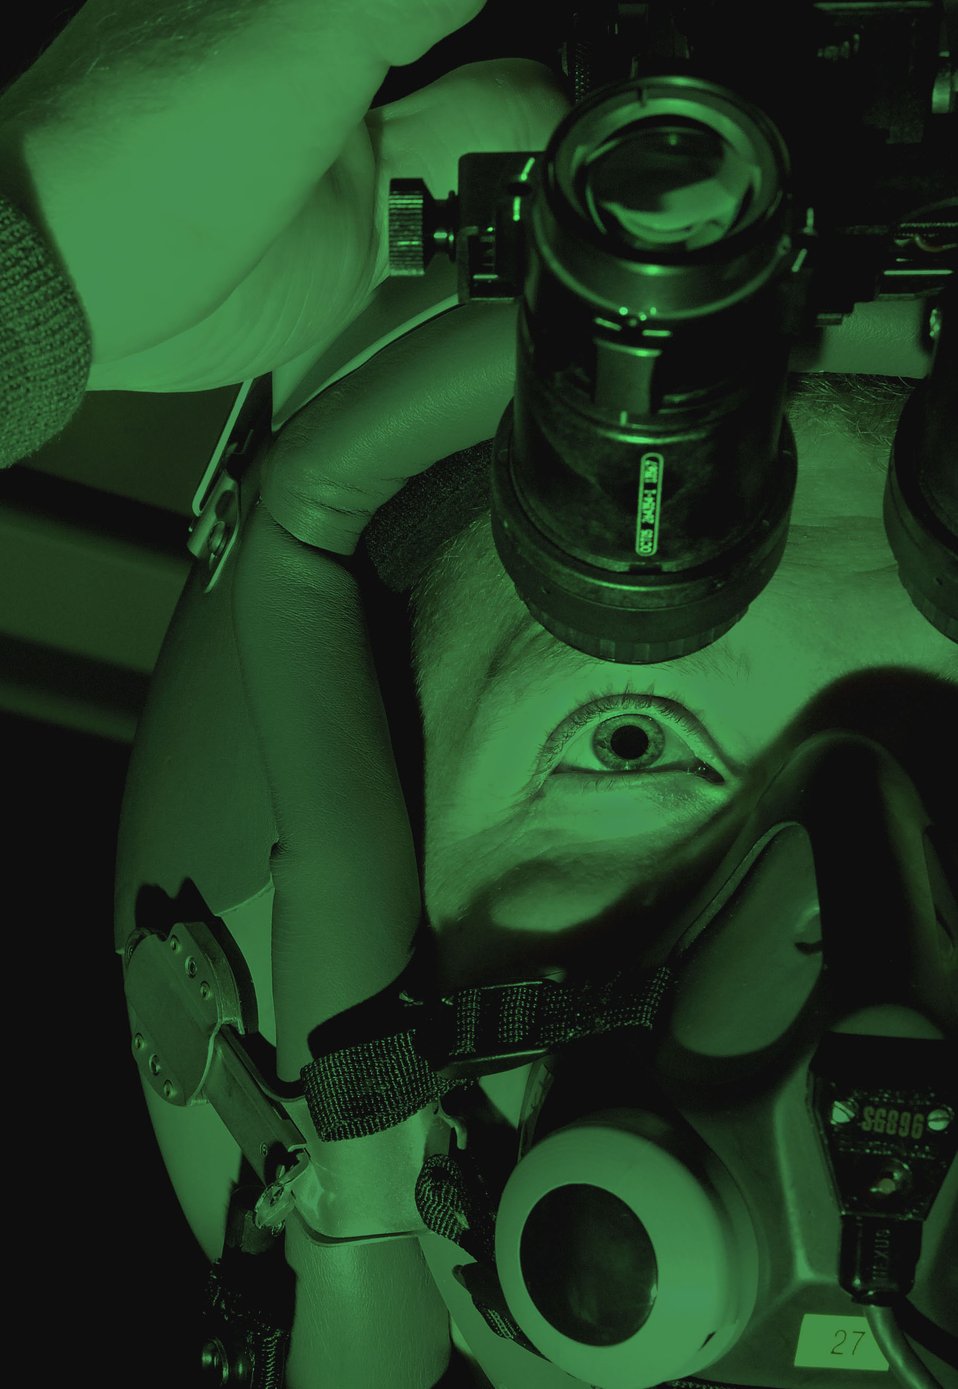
Night Vision Goggles

Capt. Brian Beales tests his night vision goggles before a night sortie Tuesday, March 21, 2006, at Langley Air Force Base, Va. Captain Beales is with the 27th Fighter Squadron.